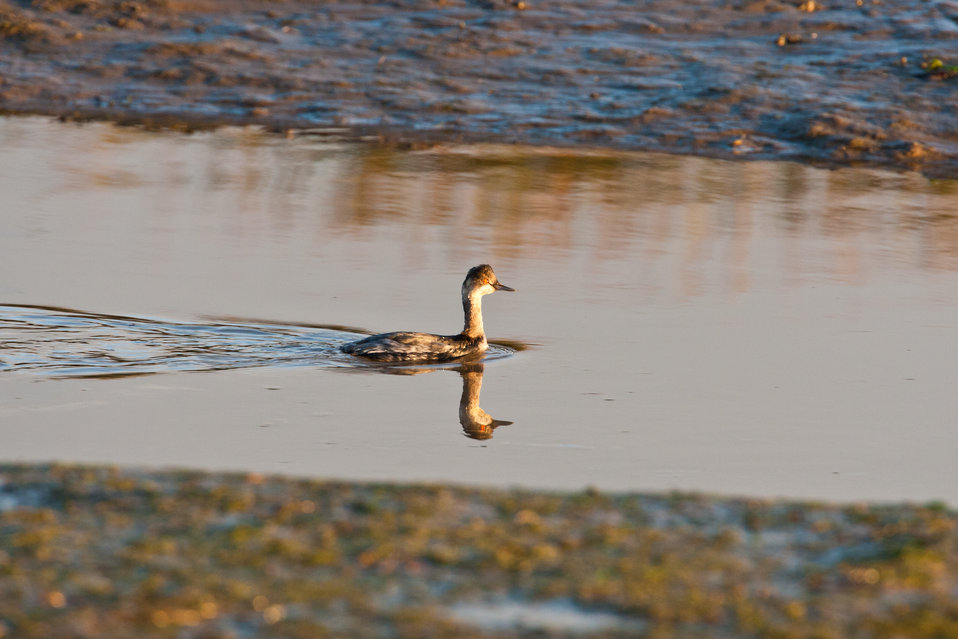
Juvenile eared grebe (Podiceps nigricollis)